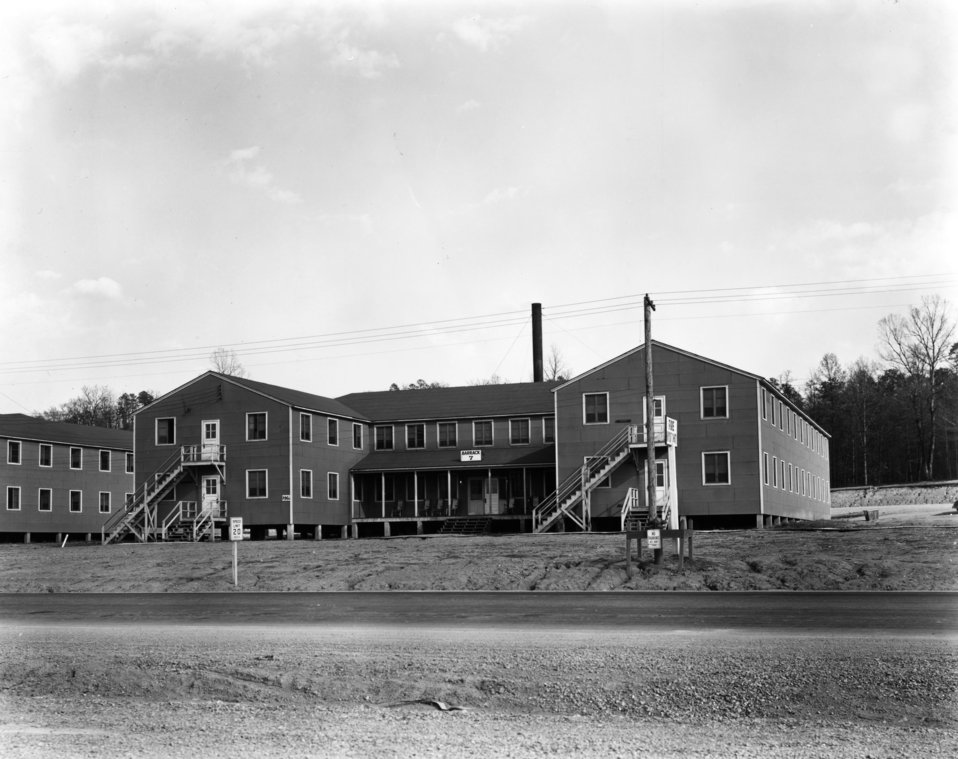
Army Activity at Oak Ridge